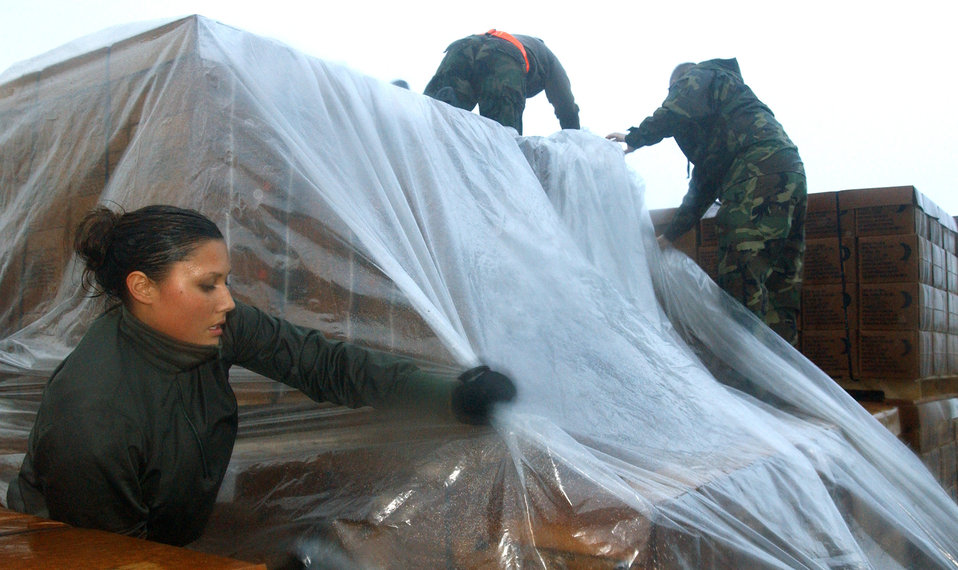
Airmen continue tsunami relief

KADENA AIR BASE, Japan -- Airman Autumn McHam (left) and other Airmen here help cover an aircraft pallet of packaged meals bound for Southeast Asia. Airmen from the 18th Wing here are providing supplies to help with the humanitarian effort for the area devastated by a 9.0 magnitude earthquake Dec. 26 off the coast of Indonesia. The quake caused tsunami waves that killed at least 70,000 people in 12 countries. More than 3,000 cases of packaged meals and four aircraft pallets of fresh water were processed through Kadena's cargo area Dec. 28. Three KC-135 Stratotankers from here also are slated to support relief efforts in Sri Lanka. Airman McHam is assigned to the 733rd Air Mobility Squadron.